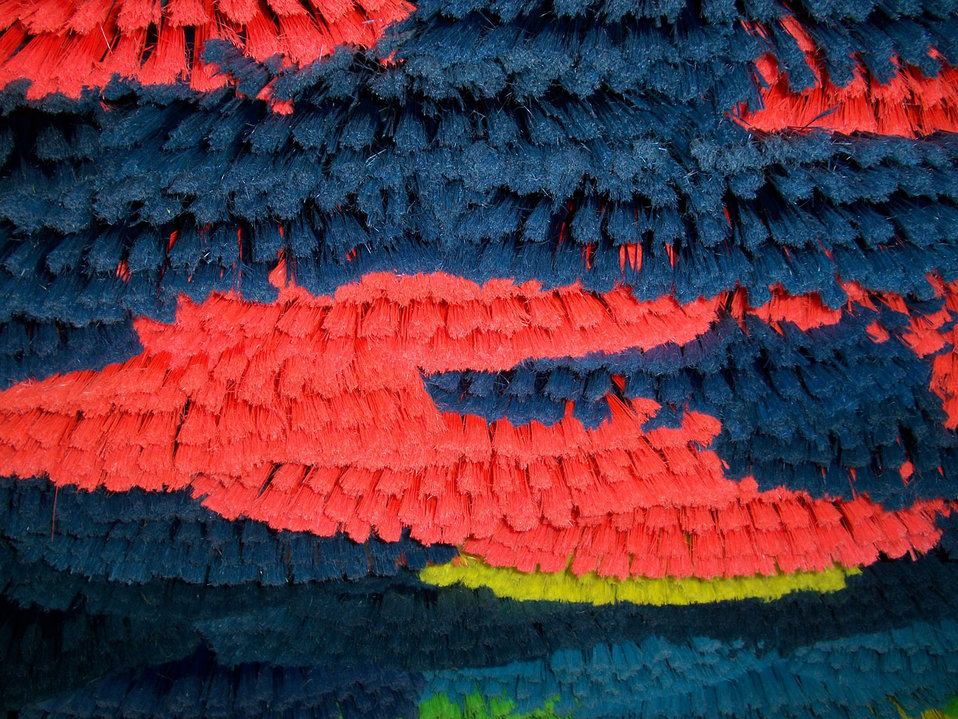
Brooms

View at stacked brooms.